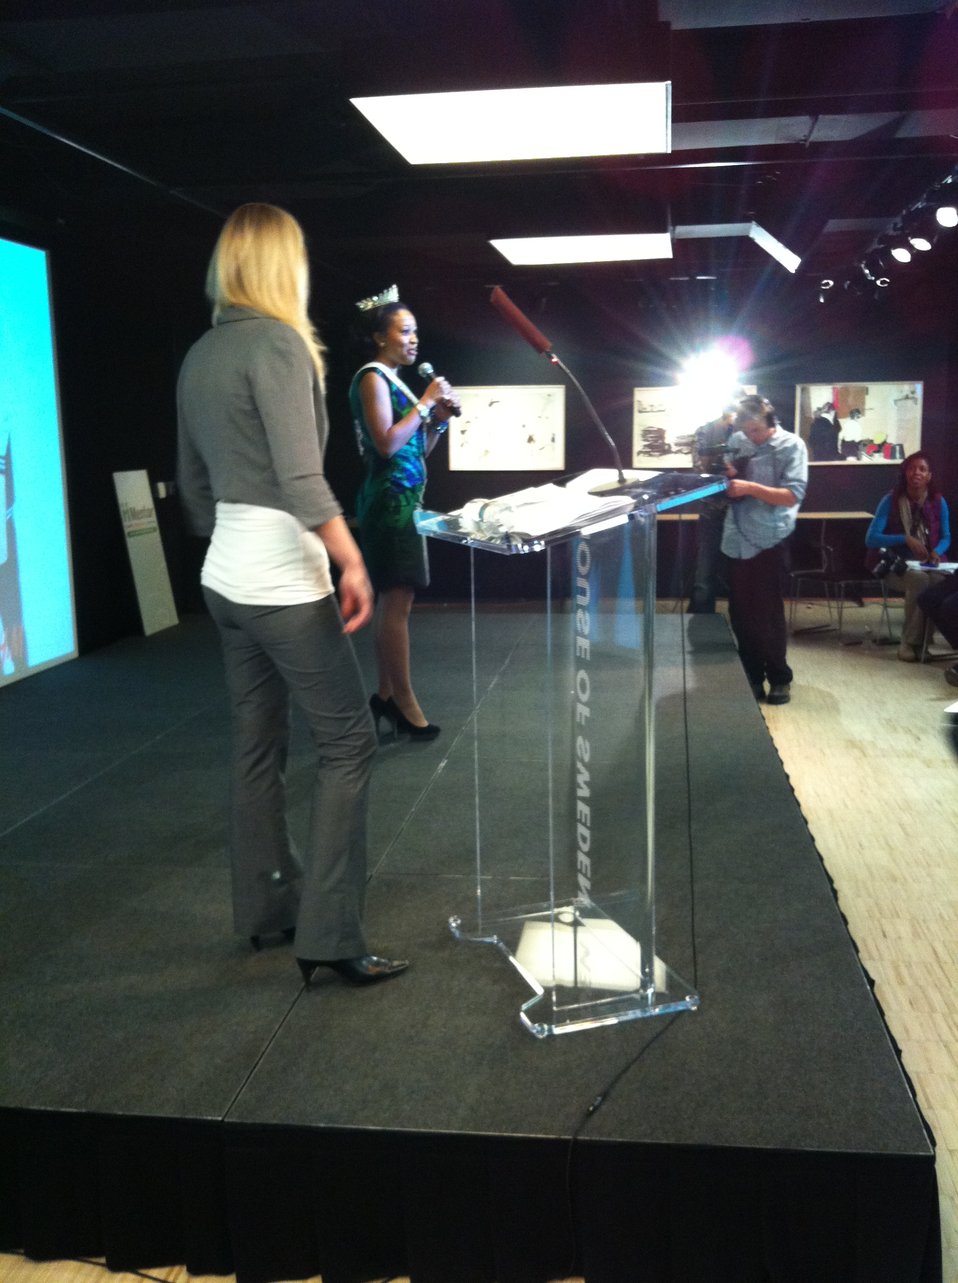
Mentor 13